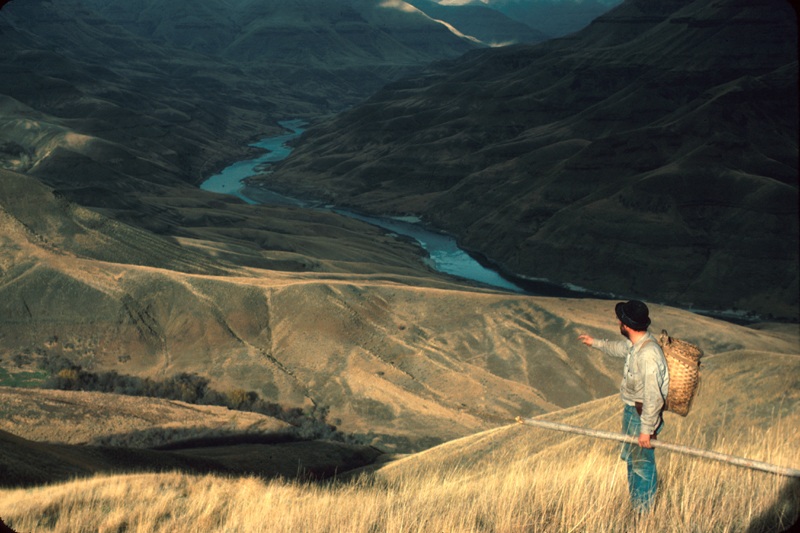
Lower Salmon River Cottonwood Field Office UCSC Upper Columbia Salmon Clearwater District